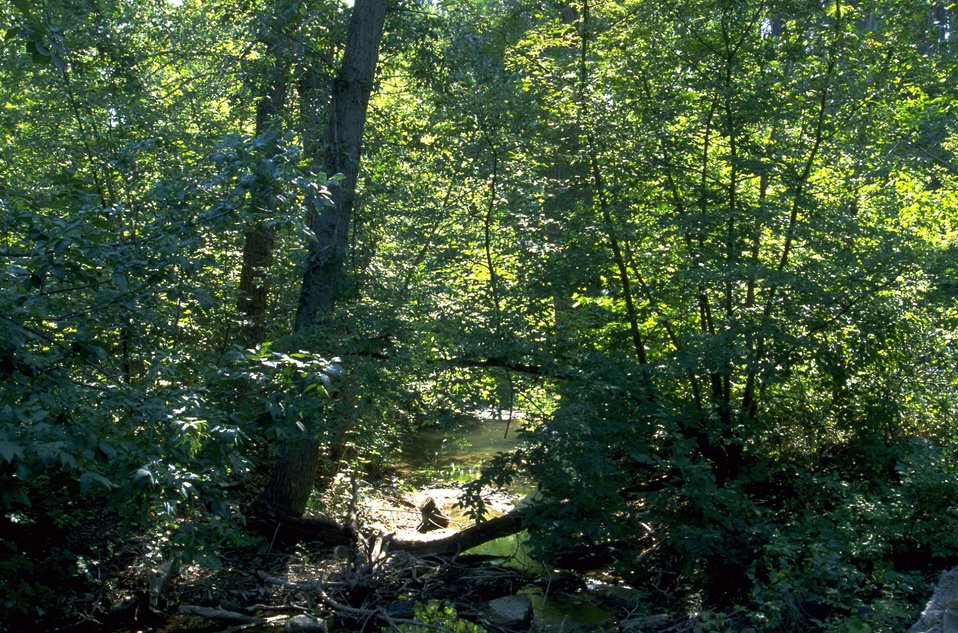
Alkali Creek Trailhead picnic site